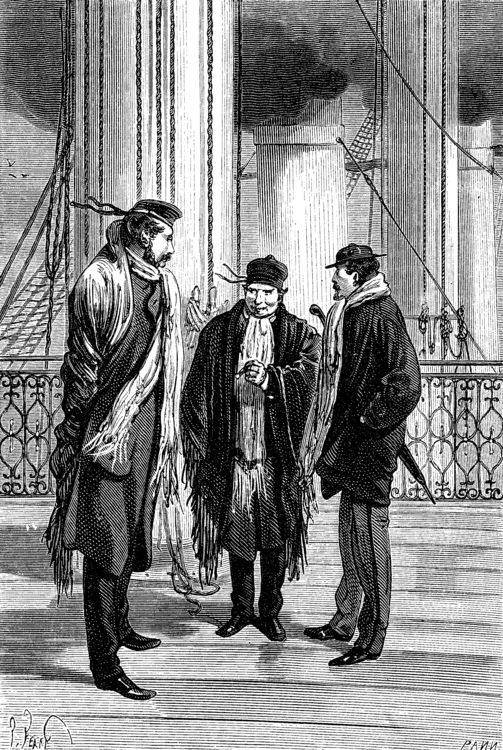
An illustration from Jules Verne's novel 'A Floating City' (1869) drawn by Jules Férat. Polski: Ilustracja powieści Juliusza Verne'a 'Pływające miasto' (1869) autorstwa Julesa Férata. Français : Jules Verne: 'Une Ville flottante' (1869), dessins par Jules Férat. Orginal text: Français : Je vois, répondit le docteur.